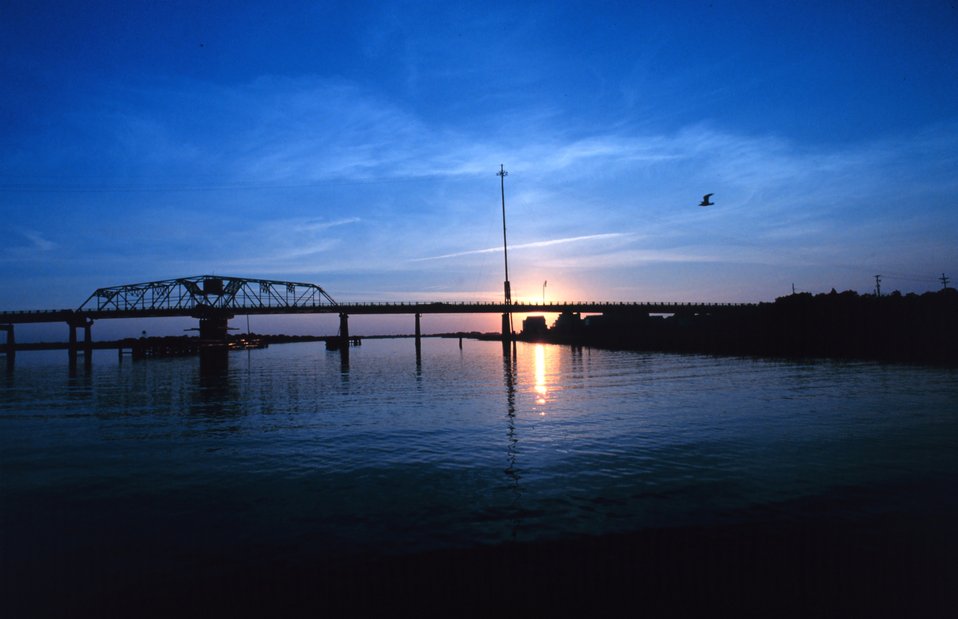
A sunset frames the Sullivan Island Bridge near Charleston.